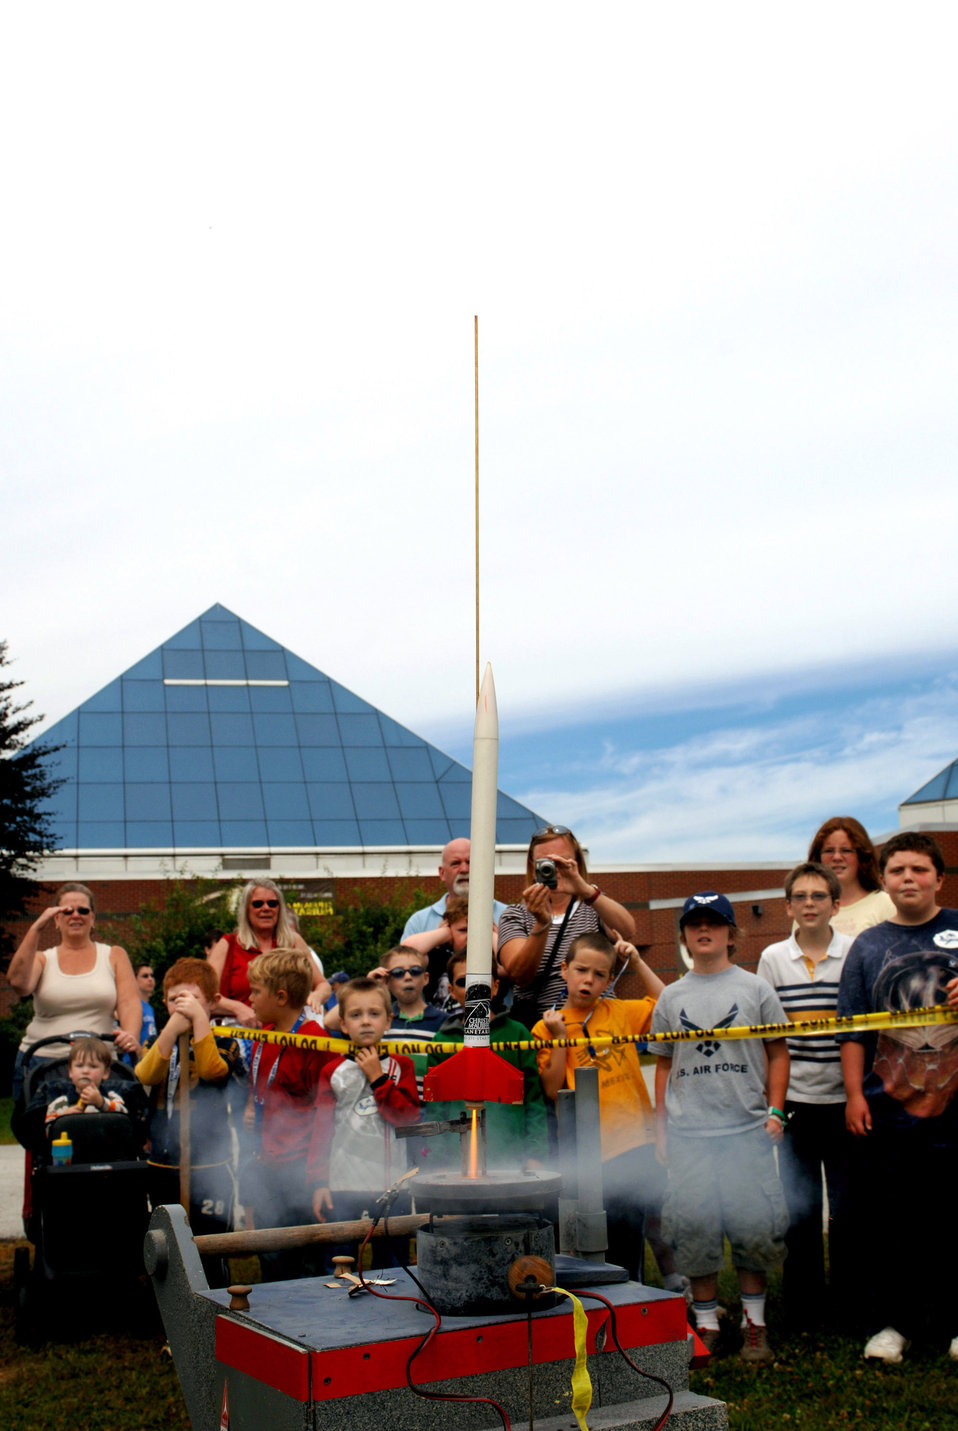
Astronaut orbits Air Force Week science day

Spectators watch as Phil Chouynerd runs the